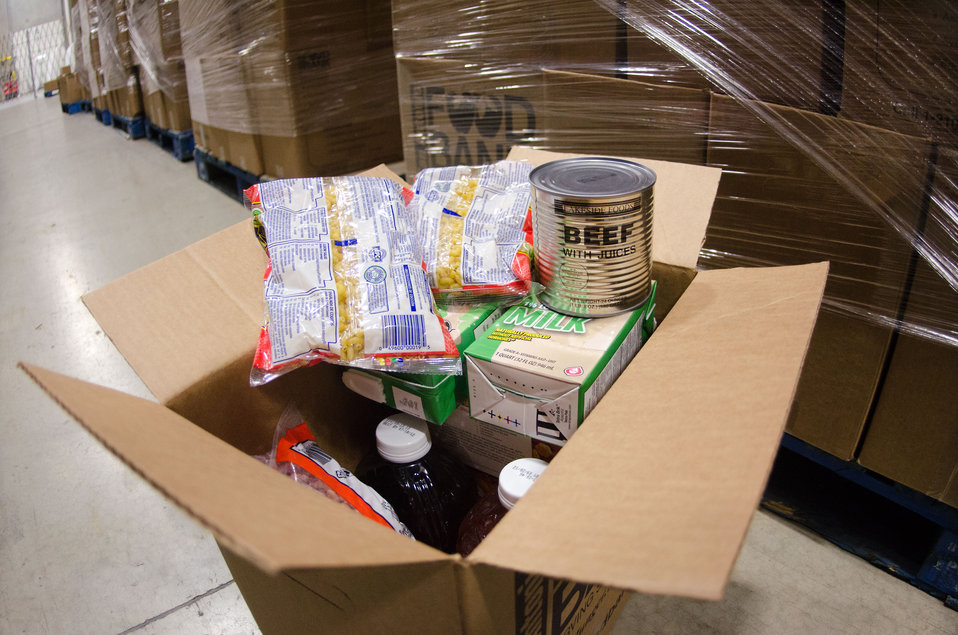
The United States Department of Agriculture donates commodities through programs such as The Emergency Food Assistance Program (TEFAP), which the San Antonio Food Bank (SAFB) packages and palletizes them for fast distribution from its San Antonio, TX., headquarters, on Monday, October 31, 2011. SAFB is a non-profit organization that serves as a clearinghouse by receiving and storing truckloads of donated food, produce, and other grocery products, they then distributes these items to over 500 service agencies that help people in need.
“We couldn’t do what we do without our partnership with USDA’” said President and CEO Eric Cooper. He continues, “We are privileged in partnering (with the USDA) to feeding kids, through the summer, with the Summer Food Service Program, and throughout the year, with the Child and Adult Care Feeding Program (CACFP). Then in our approach to feeding seniors, we partner with USDA in the Commodities Supplemental Food Program (CSFP), and the Senior Farmer’s Market (Nutrition) Program. And then work to bring all our (needy) parties together with our Supplemental Nutrition Assistance Program (SNAP) Outreach. You know, once families have access to food we believe it is important to educate them. Through the support of the SNAP-Education Program we are able to educate them during their time of need. With this comprehensive approach we are really able to get the right food, at the right amount, at the right time, to needy families throughout our community – which allows us to feed the fifty-eight thousand we do, each week.”
SAFB serves 16 counties in Southwest Texas and states, “Nearly one out of every four children and one out of every five adults in Southwest Texas lives in poverty and has difficulty meeting basic nutritional needs.” According to SAFB, sixty-five percent of the people requesting emergency food have children. “Additionally, the senior citizens and those living on a fixed income generally have limited funds for a consistent grocery budget.”
San Antonio is the seventh largest city in the nation with surrounding farms and ranches near its rivers and water supplies. When available they provide fresh surplus produce. Other commodities come from the food industry and manufacturers. The major food brand companies that for various reasons have surplus commodities donate it to SAFB.
Texas farmers supply fresh produce to their Fresh Produce Program.
Public donations come in the form of money, food, volunteer time, and advocacy.
Their fleet of trucks pickup and deliver food as needed.